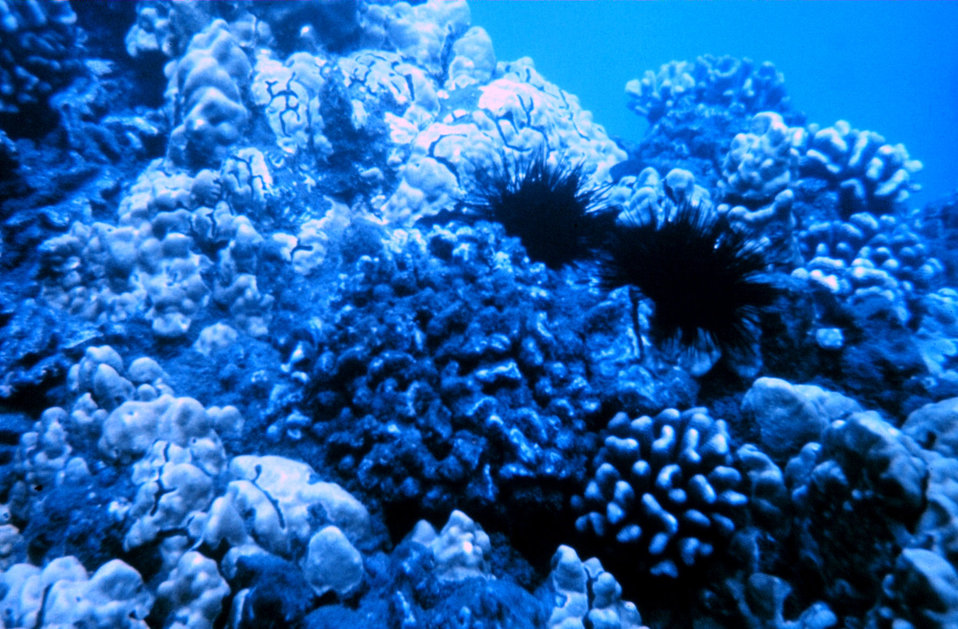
Diadema sp. urchins feeding on algae growth on dead Porites lobata. Note contrast between dead coral and live colony on bottom right.